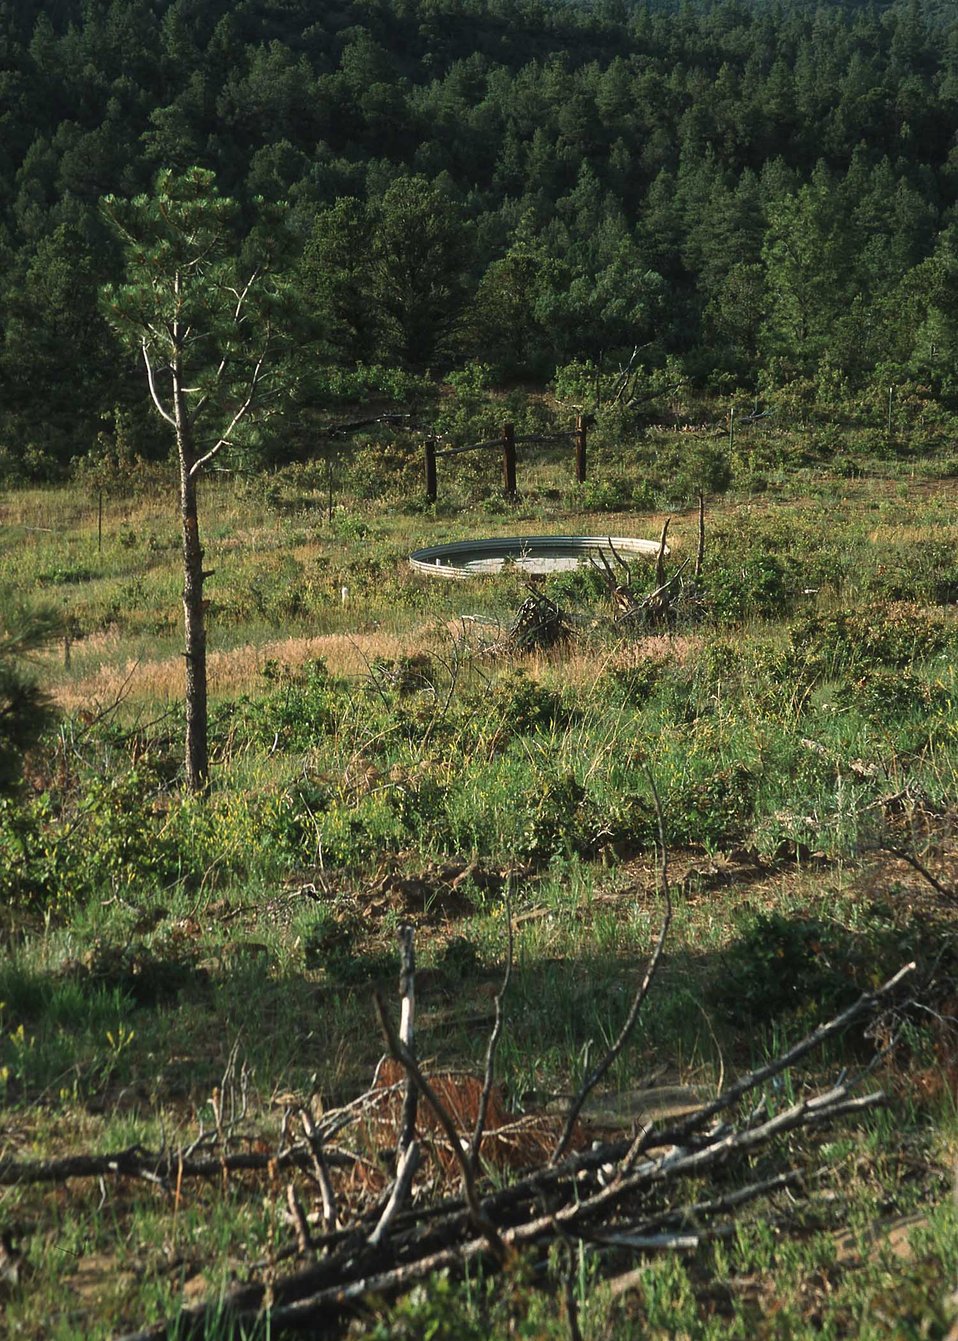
Livestock Water Trough near Spanish Peaks, CO.